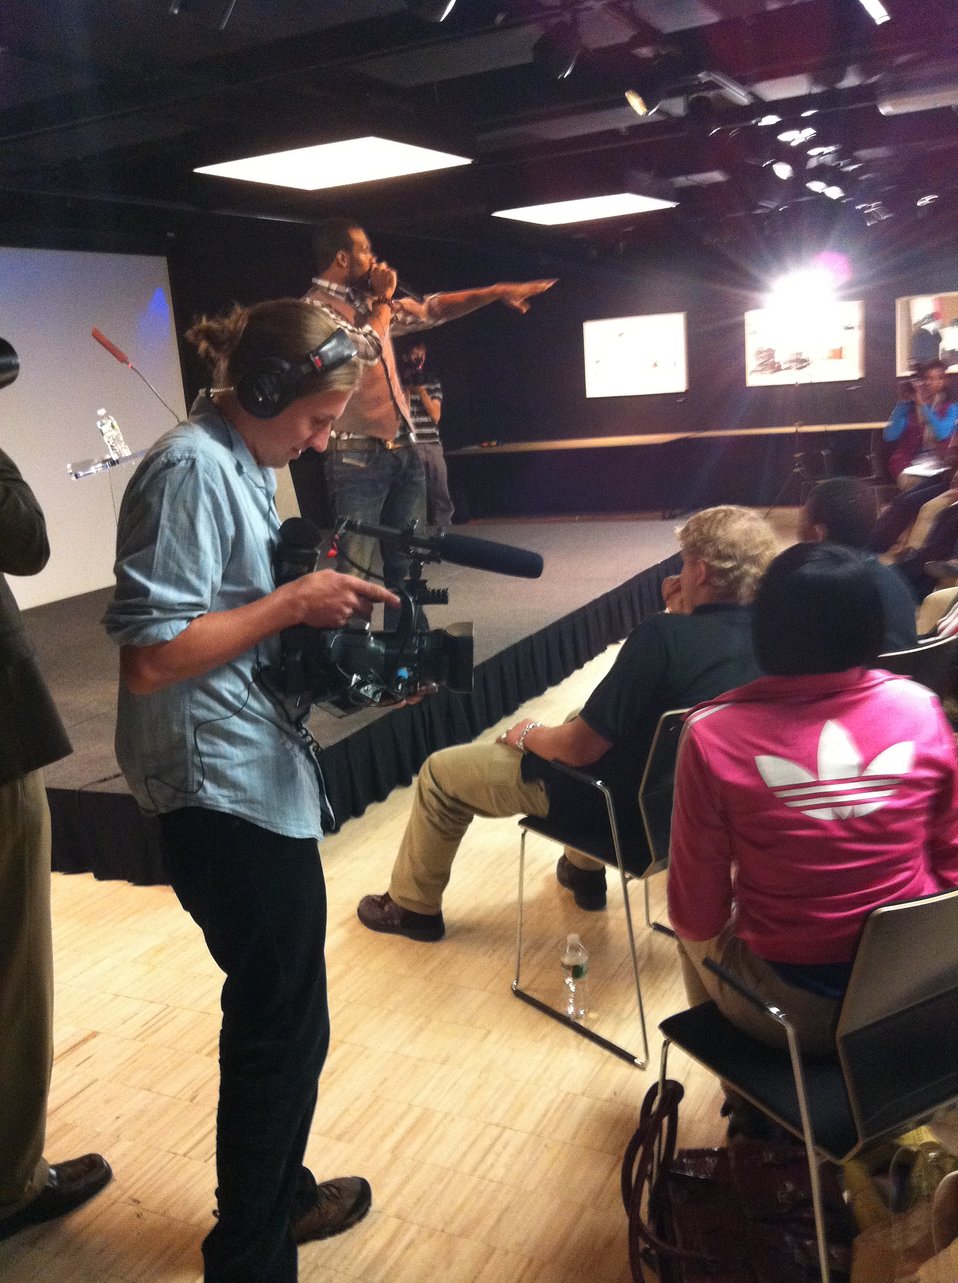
Mentor 11